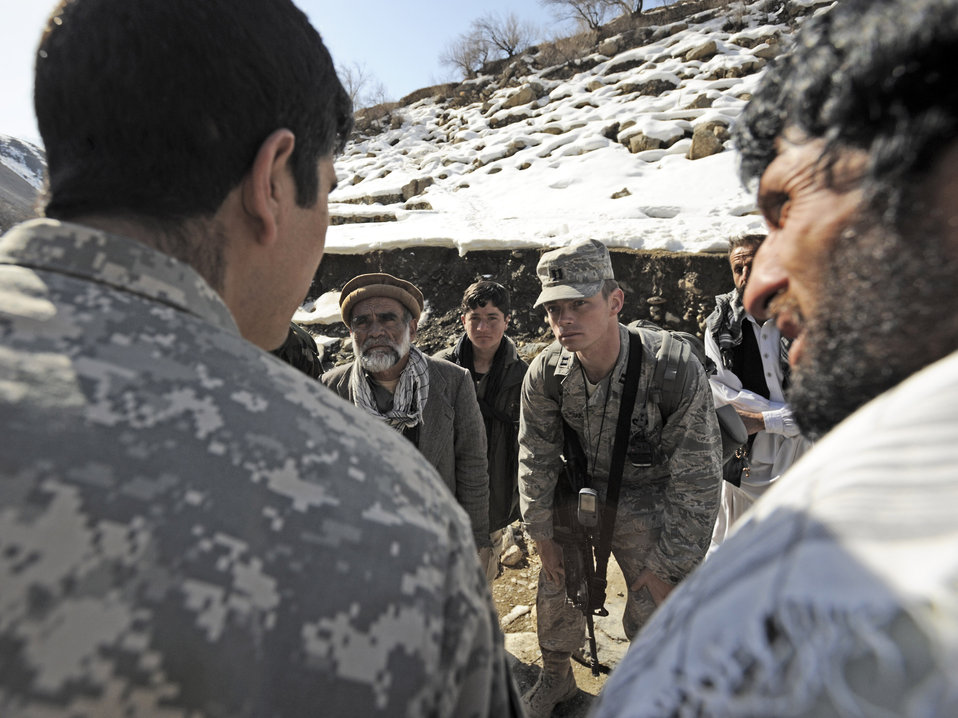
Panjshir PRT unites Airmen, Soldiers for common cause

Capt. Patrick Kolesiak talks with local villagers about energy issues in Afghanistan in Panjshir, Afghanistan. Captain Kolesiak is the Panjshir Provincial Reconstruction Team lead civil engineer.